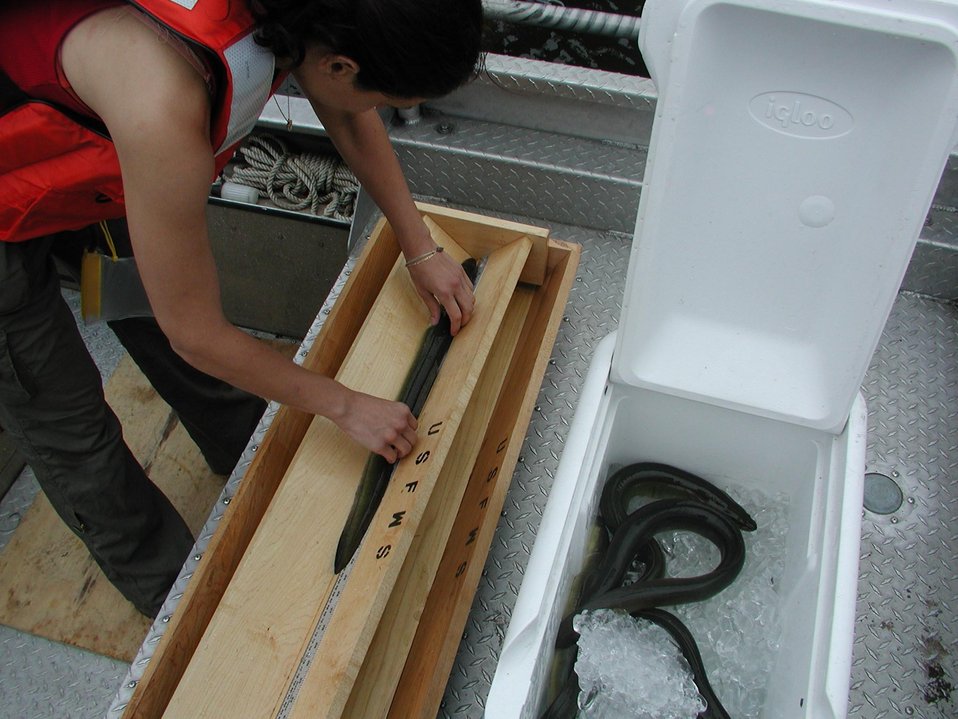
American eel

Another biologist working with eels from the Connecticut River. Eel populations in this river have been affected by high dams, so this office has focused on improving eel passage above dams. Eel numbers are monitored by these eel passes to help understand the status of these populations.